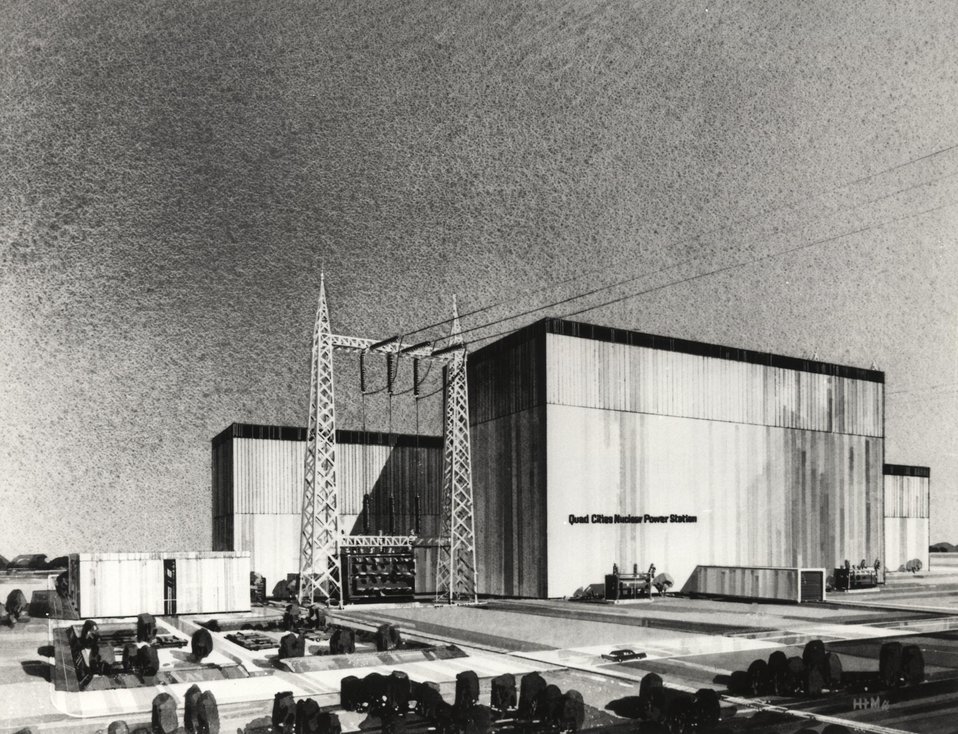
Artist's sketch of Commonwealth Edison Company's Quad-Cities nuclear power station.